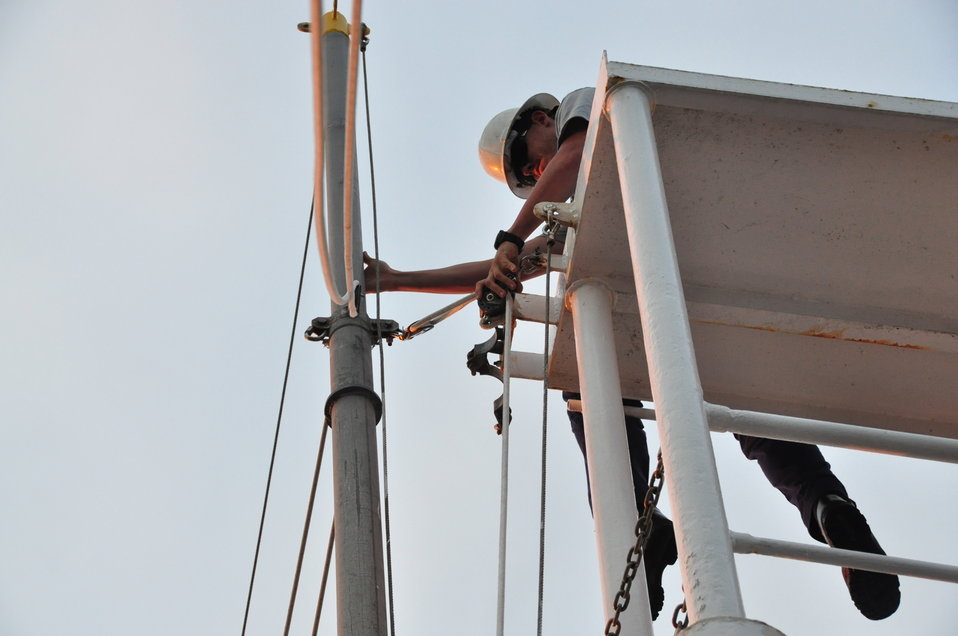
August 5, 2011 Preparing the plankton nets